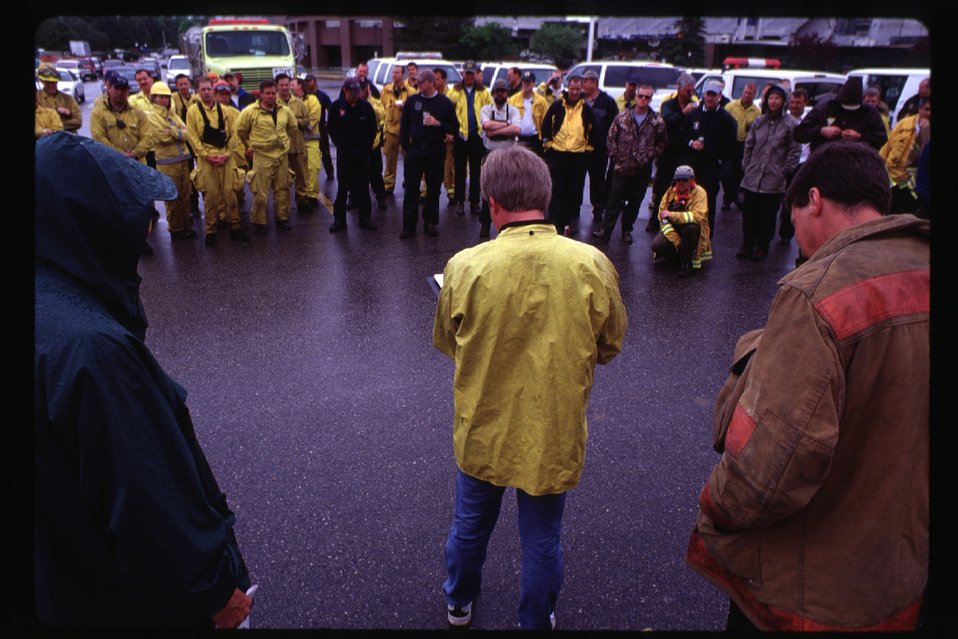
Fire fighter training in foothills Four Rivers Field Office LSRD Lower Snake River District